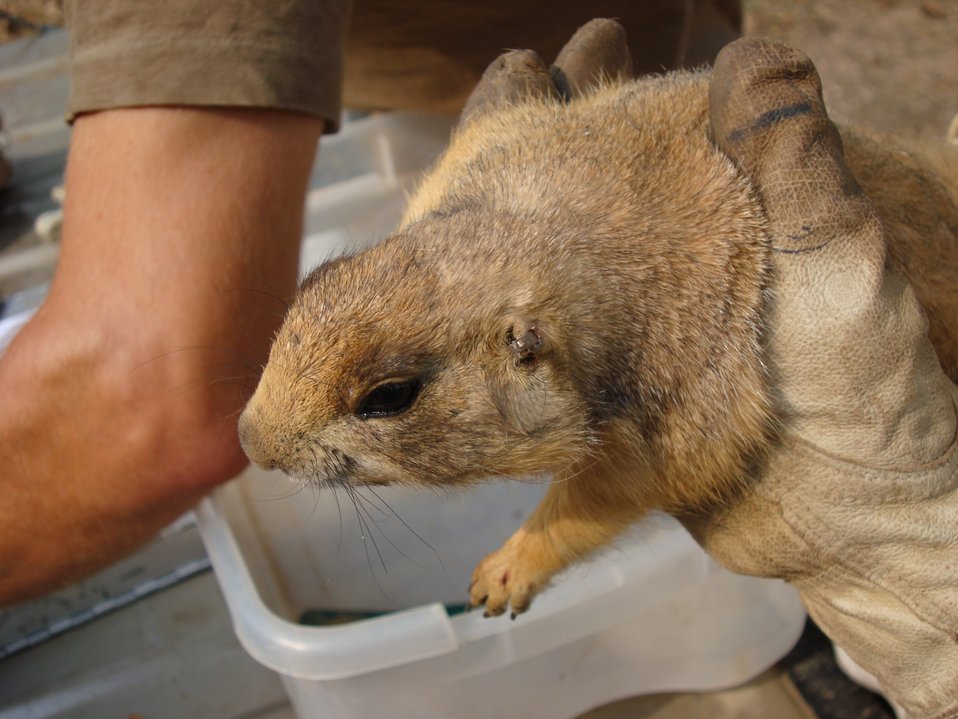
Utah Prairie Dog

Sylvatic plague disease has been decimating prairie dog populations across the Great Plains in North America since 1900. The USFWS has been researching how to prevent plague outbreaks in the prairie population by investigating flea ecology.